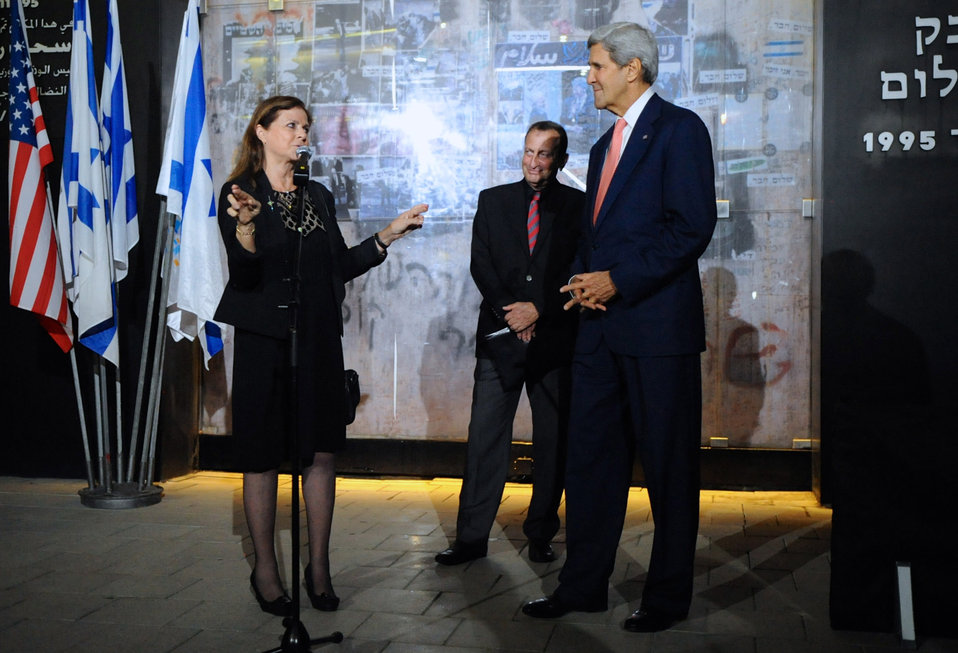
Yitzhak Rabin's Daughter Says She Has Fingers Crossed For Middle East Peace

Yitzhak Rabin's daughter Dalia says she has her fingers crossed for Middle East peace as she speaks after U.S. Secretary of State John Kerry laid a wreath at the site where the former Israeli Prime Minister was assassinated in 1995, during a stop in Tel Aviv, Israel, on November 5, 2013.